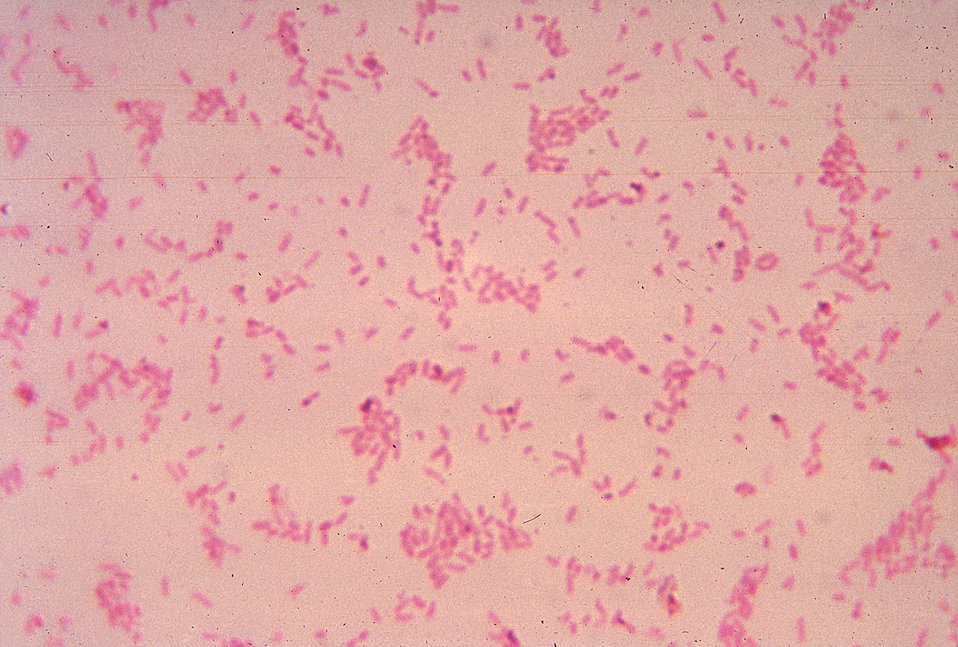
This micrograph depicts Bacteroides fragilis ss. ovatus bacteria cultured in blood agar medium for 48 hours.